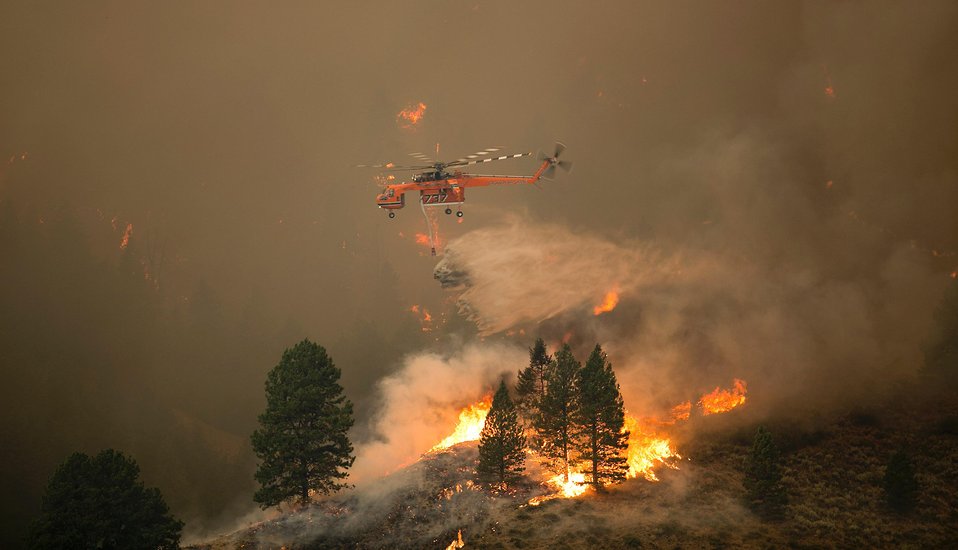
A sky crane drops water on fire in the Lester Creek drainage area of the Elk Complex Fire. The Elk Complex Fire in the Boise National Forest near Pine, ID began on Aug. 08, 2013 by lightning has consumed approximately 98,413 acres and is approximately 5% contained.